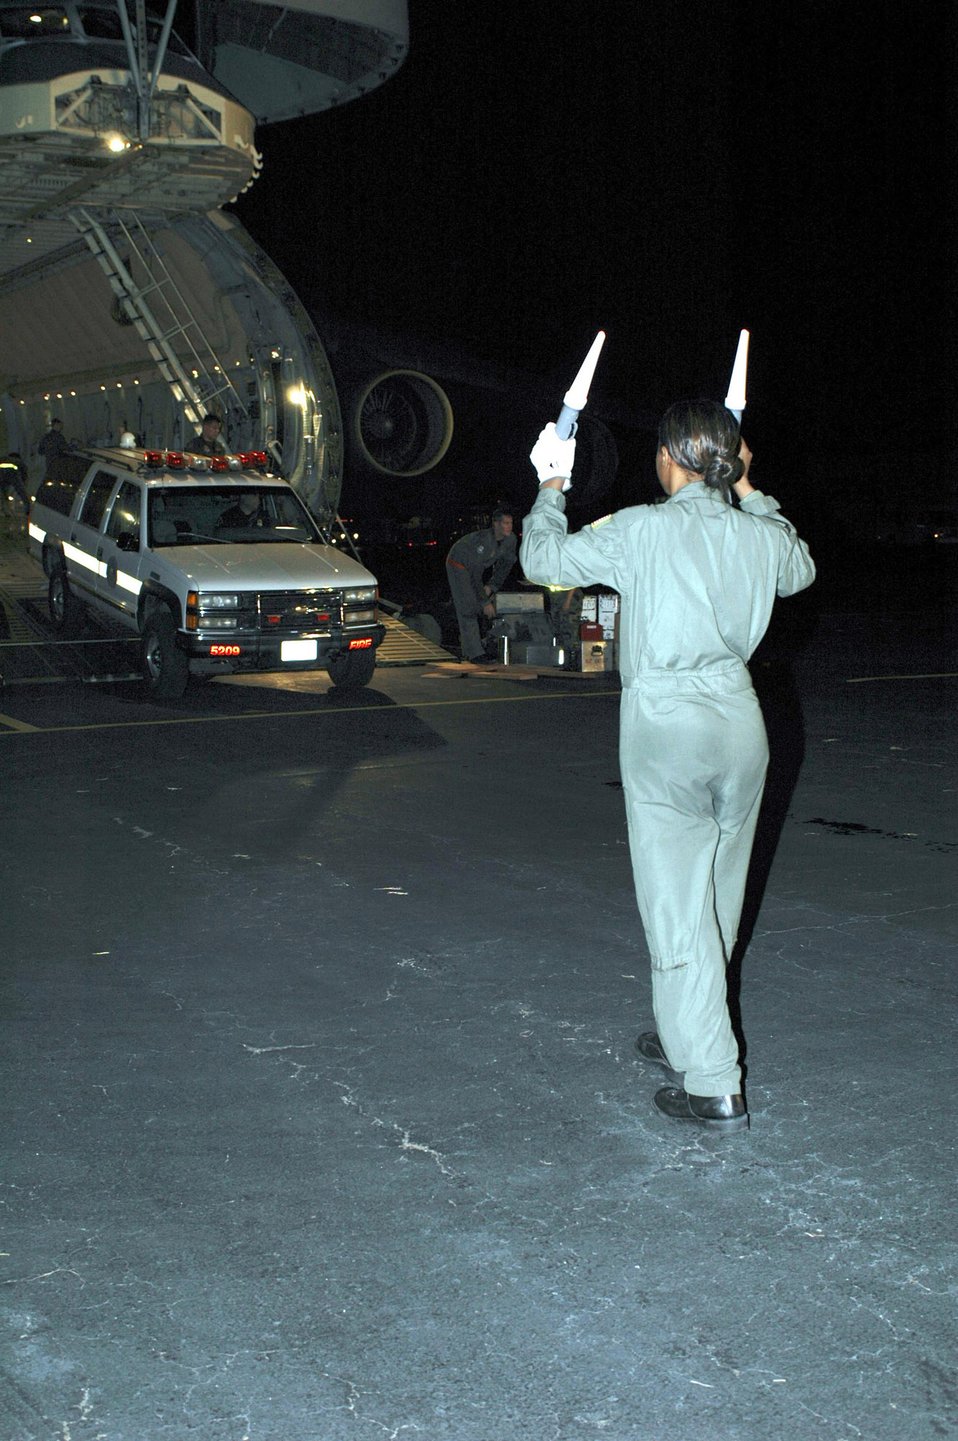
AMC answering humanitarian call in aftermath of Katrina

LAFAYETTE, La. -- Airman 1st Class Alicia Hudson marshals an emergency vehicle as it is unloaded here from a C-5 Galaxy on Aug. 30. The vehicle will be used in Hurricane Katrina relief operations in Mississippi and Louisiana. Airman Hudson is a loadmaster with the 21st Airlift Squadron at Travis Air Force Base, Calif.